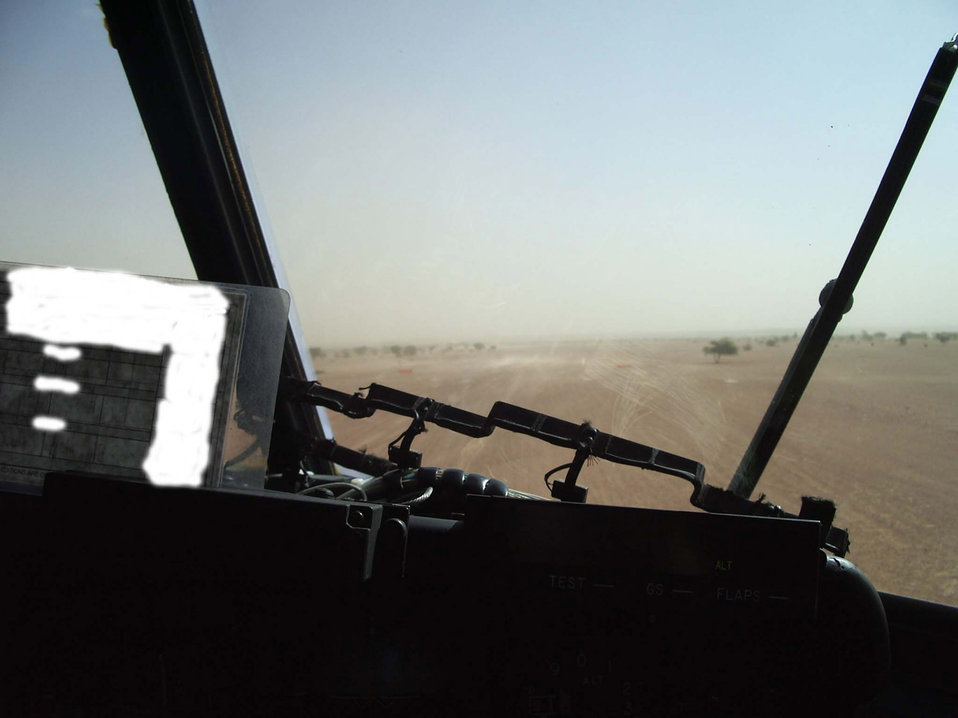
C-130 goes to Africa

A C-130 Hercules pilot looks over the landing zone prior to takeoff Jan. 28. The operation was a joint mission integrating Army and Air Force assets and deploying these capabilities to the heart of sub-Saharan Africa.